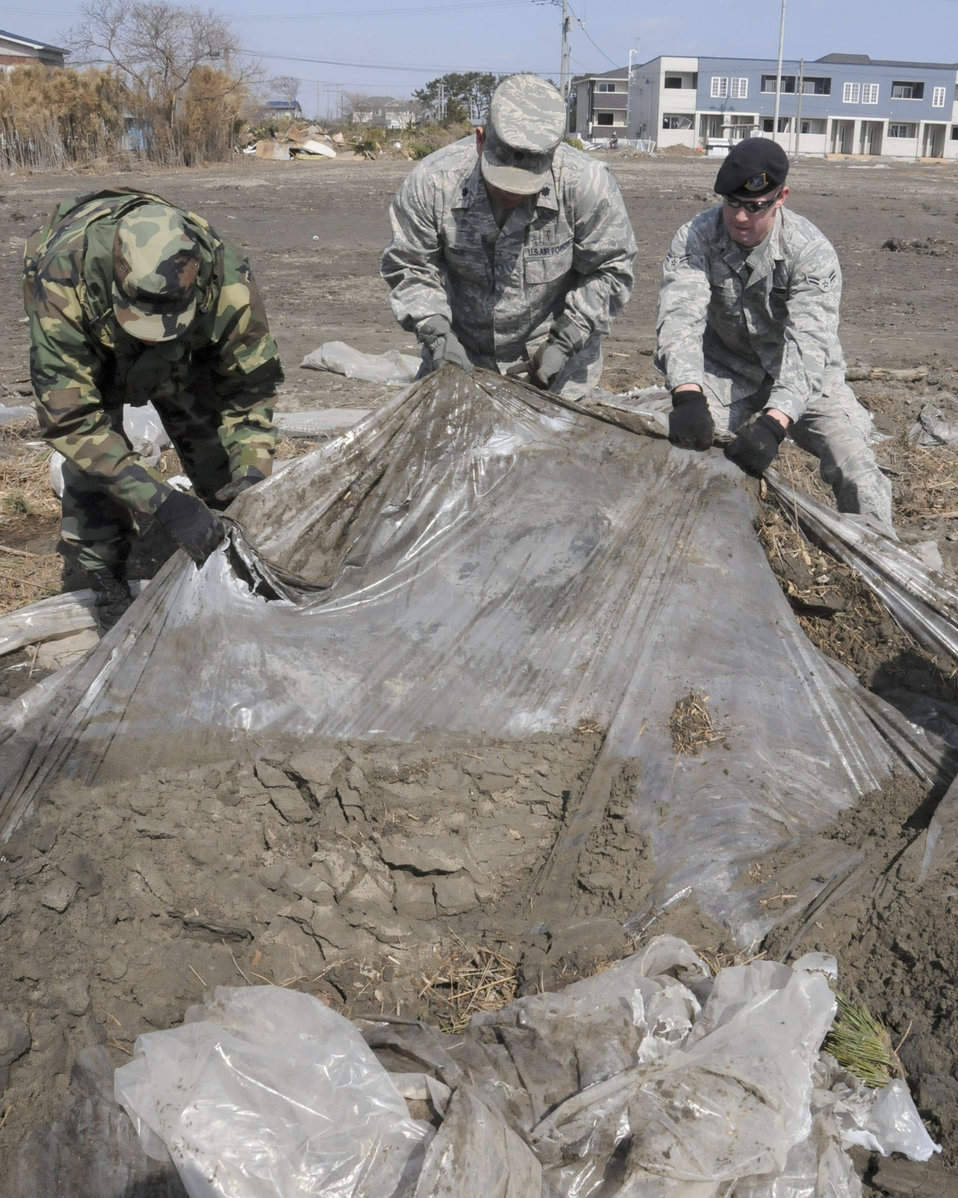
Misawa helps

Airmen uncover plastic sheets April 1, 2011, at a strawberry farm in Hachinohe, Japan.